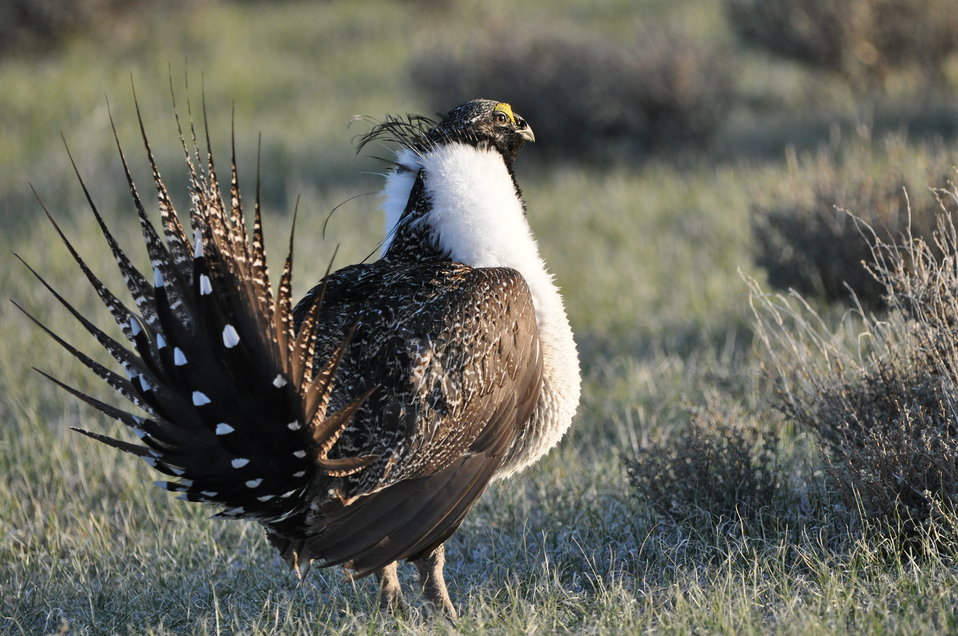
Greater Sage-Grouse

Photo Credit: Jeannie Stafford/USFWS
A greater sage-grouse male struts at a lek (dancing or mating ground) near Bridgeport, CA to attract a mate.